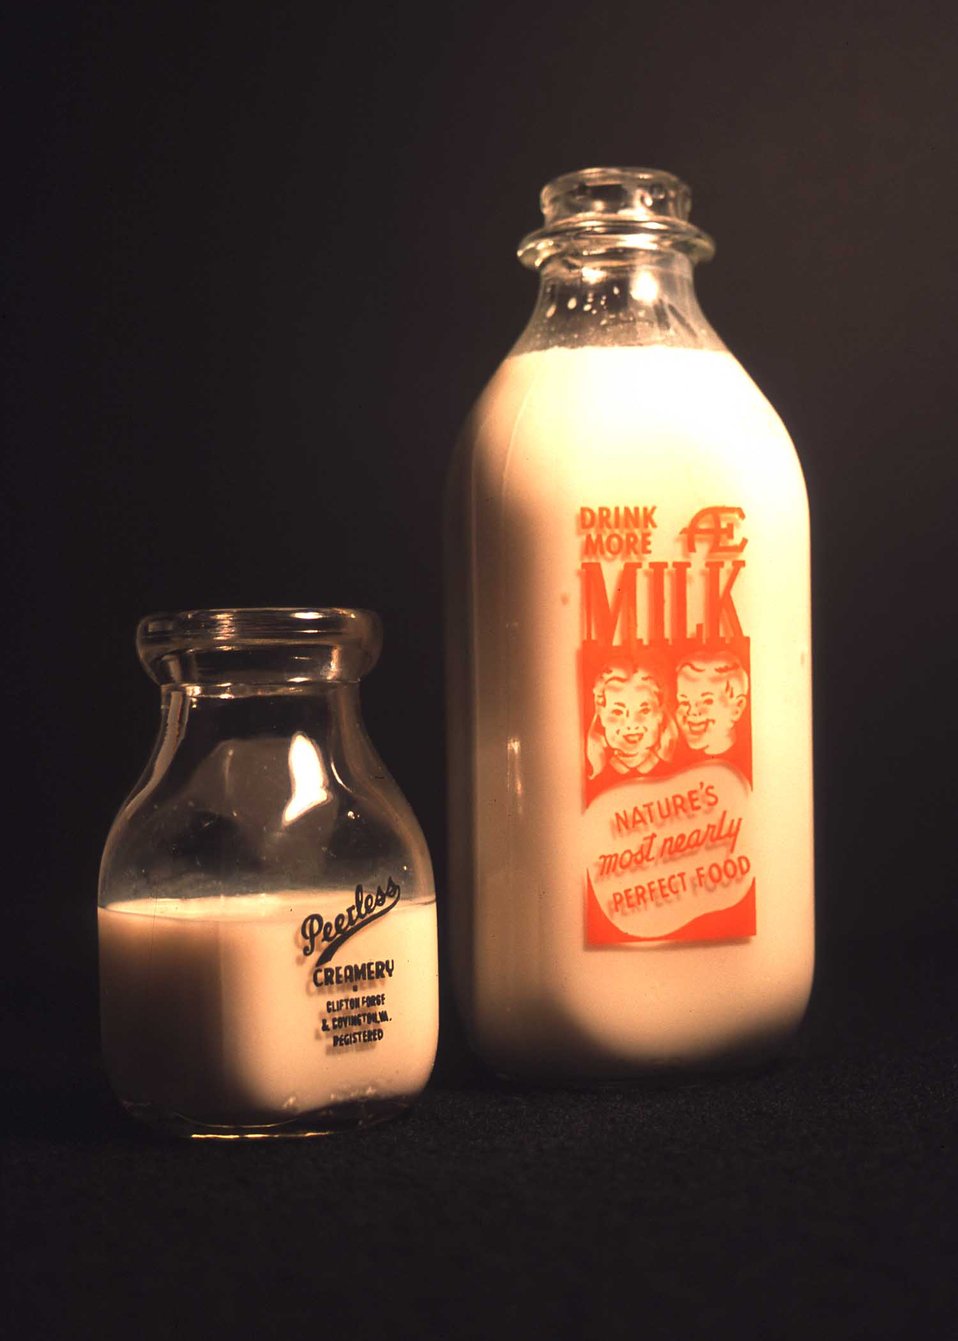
Milk is one of the most popular agricultural products produced in Missouri.